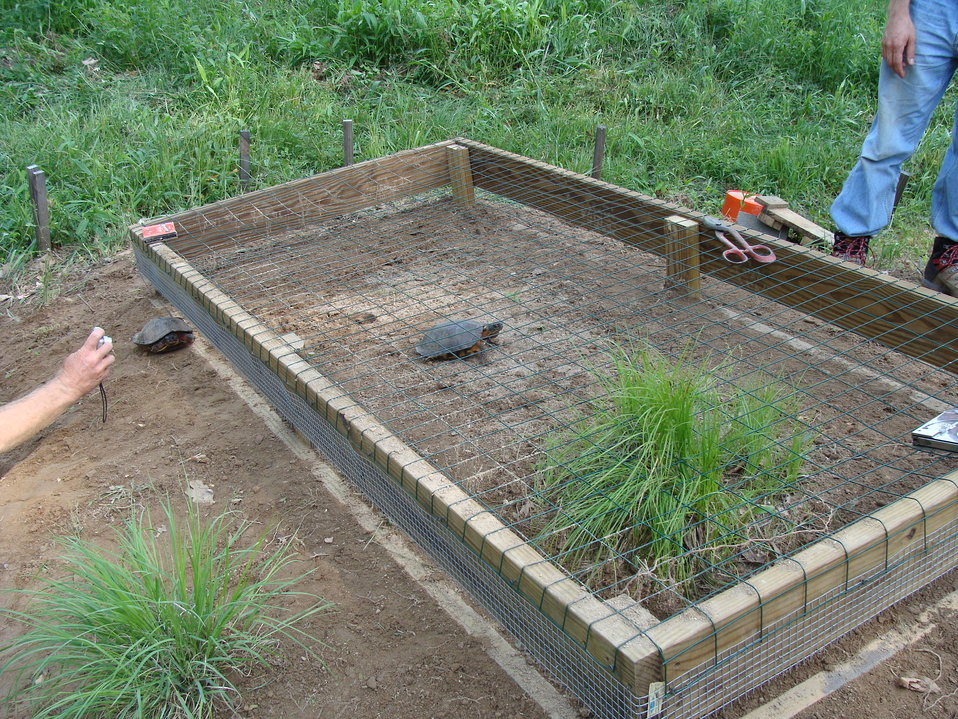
Female Wood Turtles Testing Experimental Nest Box at Great Swamp National Wildlife Refuge